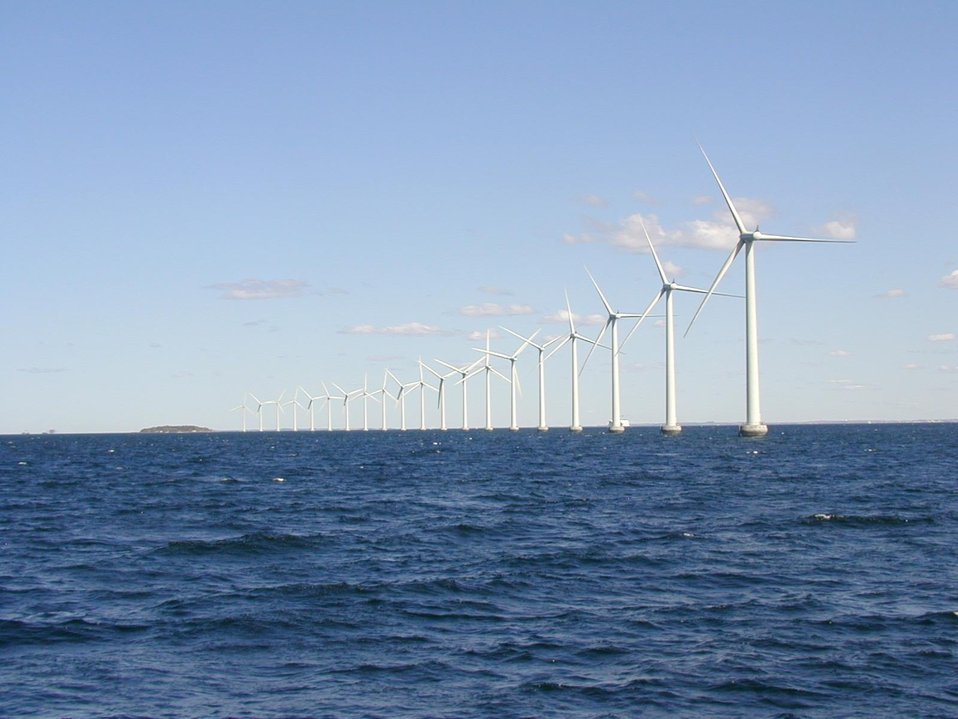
THE MIDDLEGRUNDEN WIND FARM WAS ESTABLISHED AS COLLABORATION BETWEEN MIDDLEGRUDEN WIND TURBINE COOPERATIVE AND COPENHAGEN ENERGY, EACH INSTALLING 10 2-MW BONUS WIND TURBINES.

The farm is located off the coast of Denmark, east of the northern tip of Amager.